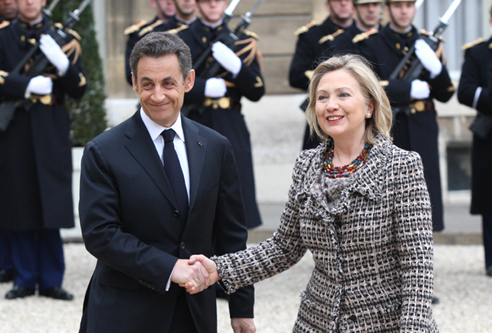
Secretary Clinton Is Welcomed By French President Sarkozy

U.S Secretary of State Hillary Rodham Clinton is welcomed by French President Nicolas Sarkozy to the Crisis summit on Libya at the Elysee Palace in Paris, France, on March, 19, 2011.